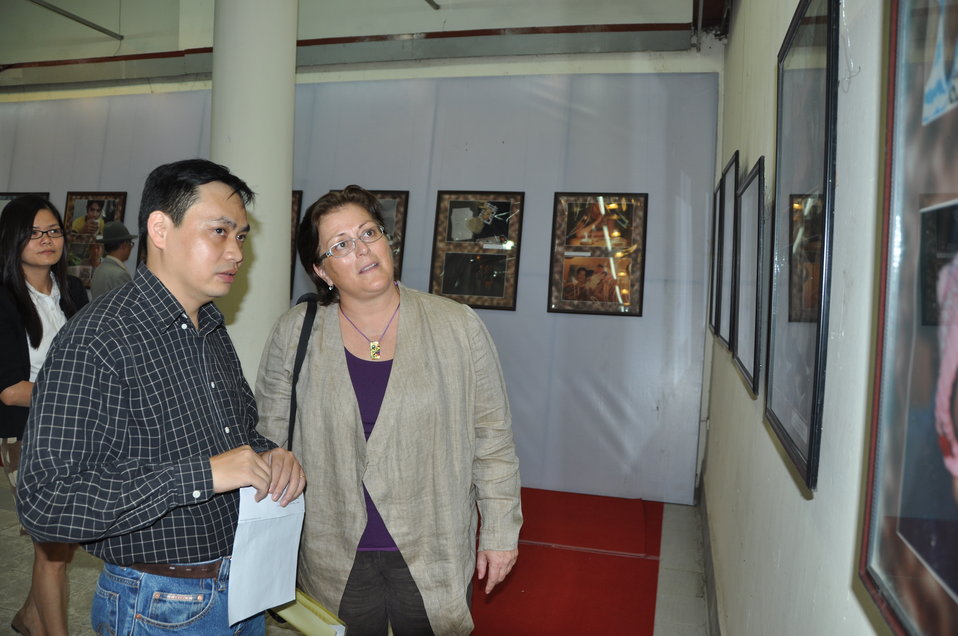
Moments in Life Exhibit: PEPFAR